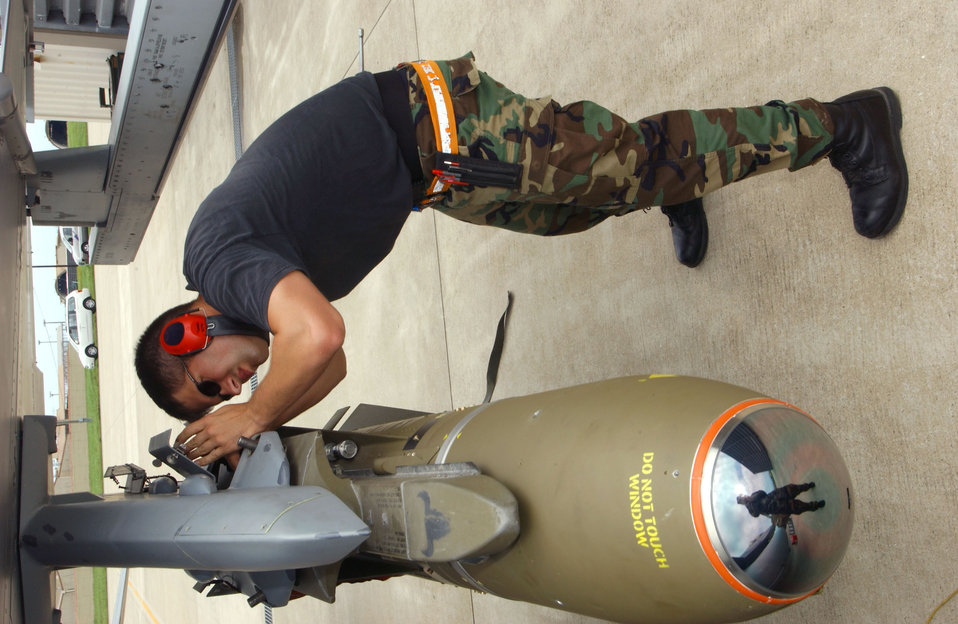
Air Guard flying in Korea

Staff Sgt. Matthew McKinley secures a Maverick air-to-ground missle to an F-16 Fighting Falcon at Kunsan Air Base, South Korea, on July 5. The aircraft is from the Montana Air National Guard's 120th Fighter Wing at Great Falls.